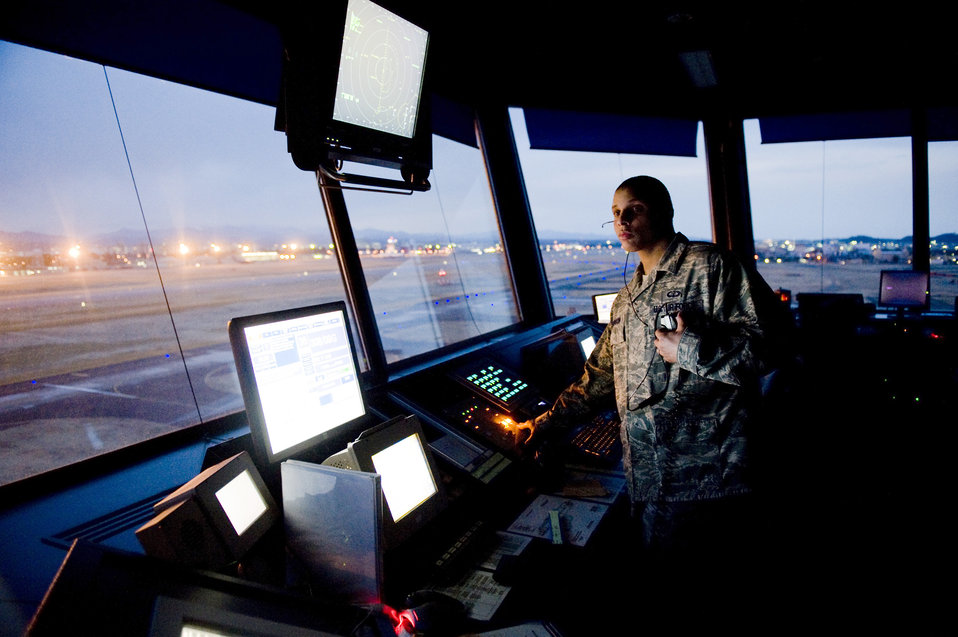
Yokota's ATC manages influx of aircraft for Operation Tomodachi

YOKOTA AIR BASE, Japan -- Senior Airman Nissean Johnson, 374th Operations Support Squadron air traffic controller, watches the flight line and sky for incoming and outgoing aircraft here March 24. Yokota's flight line has received over triple the amount of aircraft due to Operation Tomodachi. The military and civilian aircraft have been from multiple nations carrying supplies, personnel and equipment in direct support of bringing relief efforts and trying to minimize human suffering.